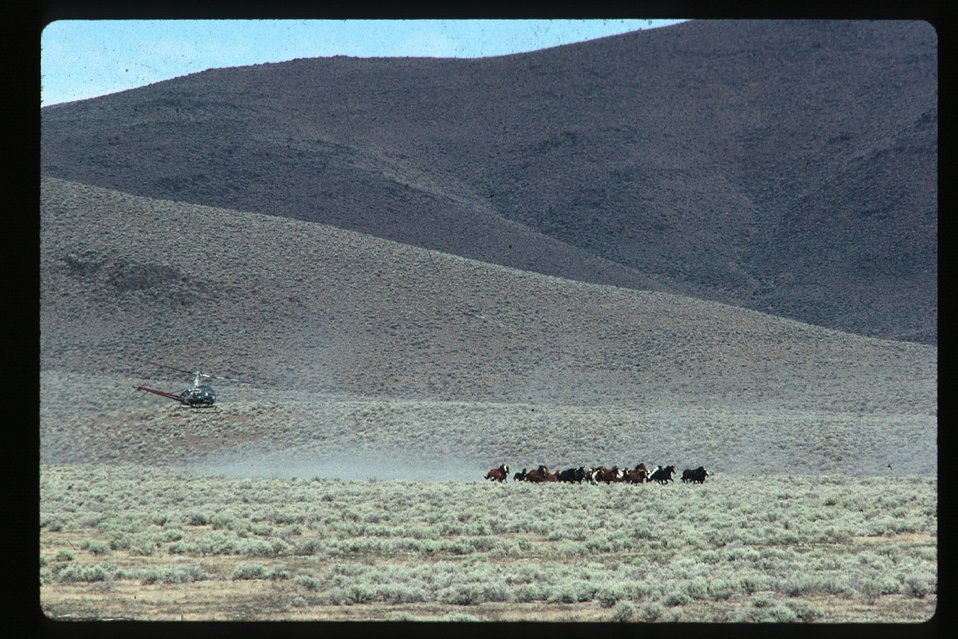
Wild horse roundup by helicopter Wild Horse and Burro Adoption Program LSRD Lower Snake River District